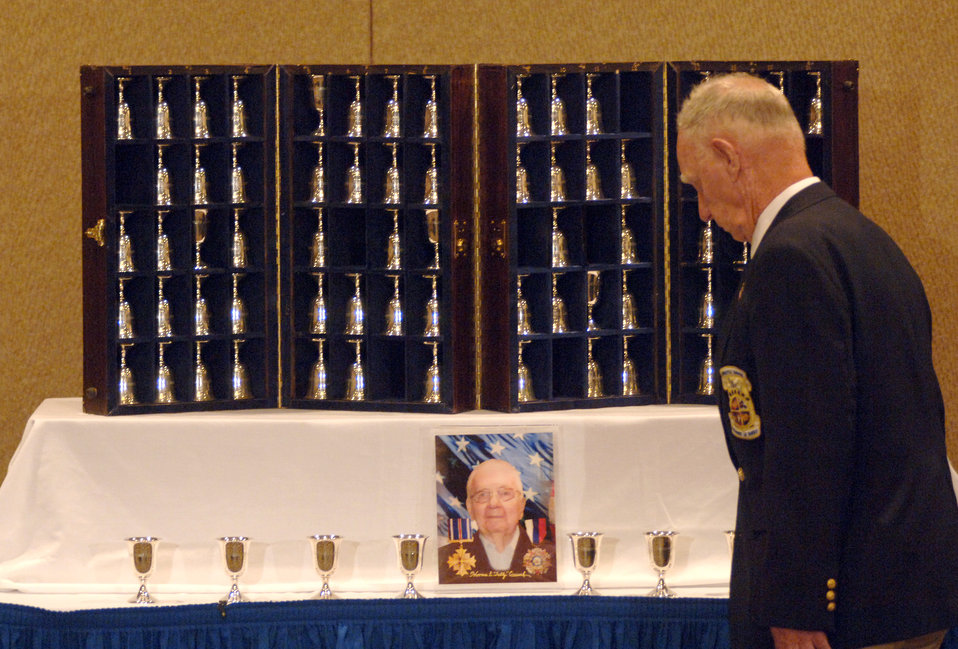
Doolittle Raiders celebrate 64th reunion

Retired Master Sgt. Ed Horton honors the memory of retired Lt. Col. Horrace Crouch by turning his goblet upside down at the goblet ceremony during the 64th Doolittle Raider reunion in Dayton, Ohio, on Tuesday, April 18, 2006. The goblet ceremony is held to honor the Raiders who died since their last meeting. This year, they honored Colonel Crouch, who passed away Dec. 21 from pneumonia.